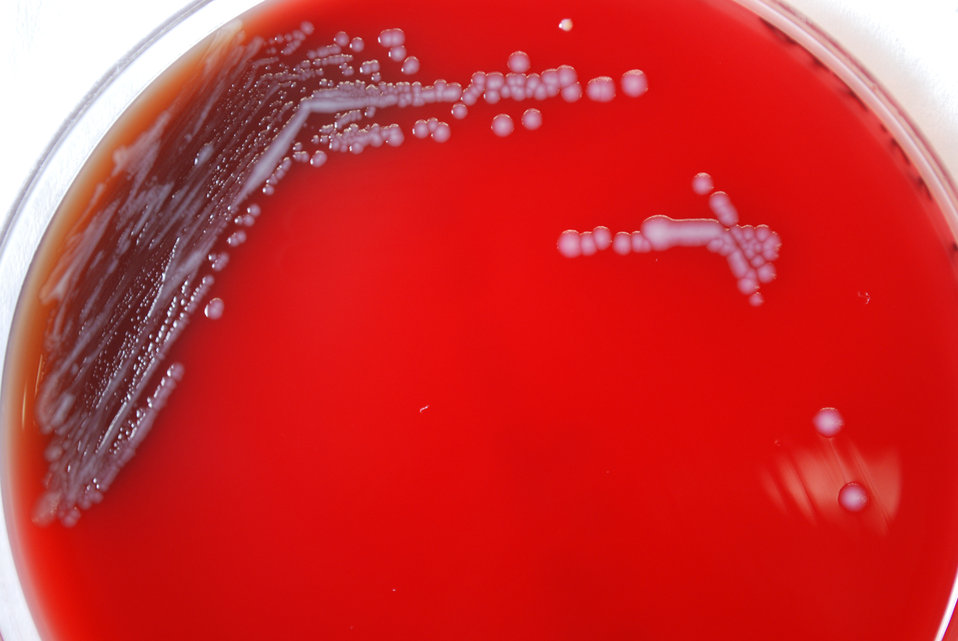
An enlarged view of PHIL 12226, this photograph depicts the colonial morphology displayed by Gram-negative Yersinia pestis bacteria, which was grown on a medium of sheep's blood agar (SBA), for a 48 hour time period, at a temperature of 37�C.